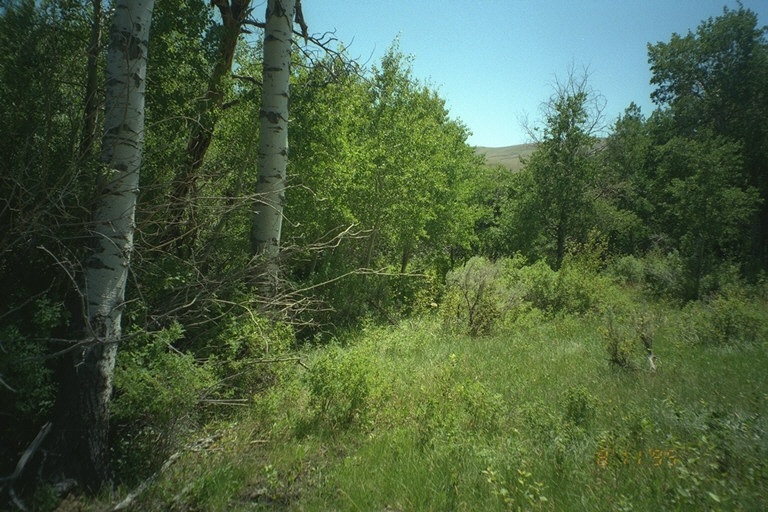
Riparian area Public Lands Salmon Field Office UCSC Upper Columbia Salmon Clearwater District